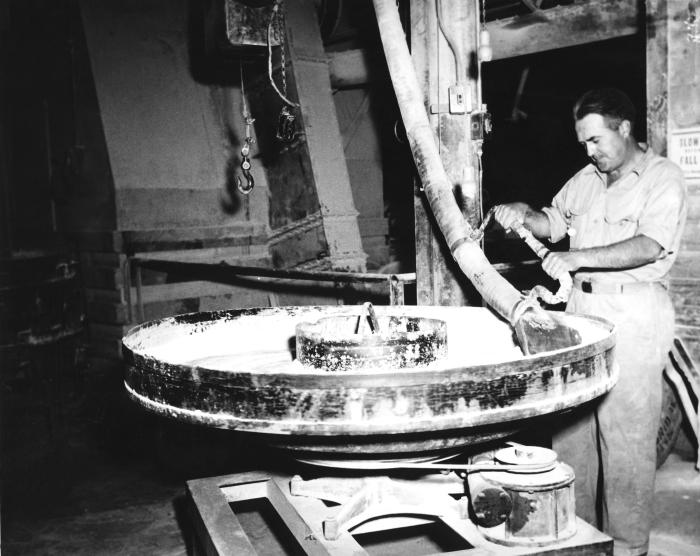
This historical 1950 photograph was provided by the Center for Disease Control's (CDC), National Institute for Occupational Safety and Health (NIOSH), and depicted a Massachusetts industrial worker who was using a vacuum hose to extract built up material inside a manufacturing vat. The worker was wearing no protective accessories such as a filtered breathing mask, gloves, or goggles, however, there is no way of knowing from this image, as to whether or not any of these items were then required. This image was published in the December, 1950, issue of the 'Industrial Hygiene Newsletter'.